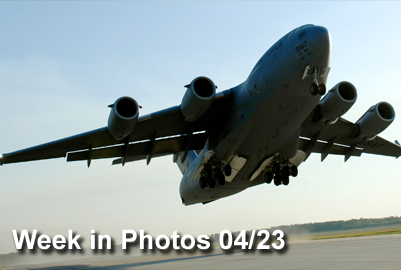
Week in Photos

Air Force Week in Photos for April 23, 2010, highlights photos from around the Air Force. In this photo by Staff Sgt. Brian Ferguson, a C-17 Globemaster III takes off April 15, 2010, from Fort Pickett Maneuver Training Center, Va.